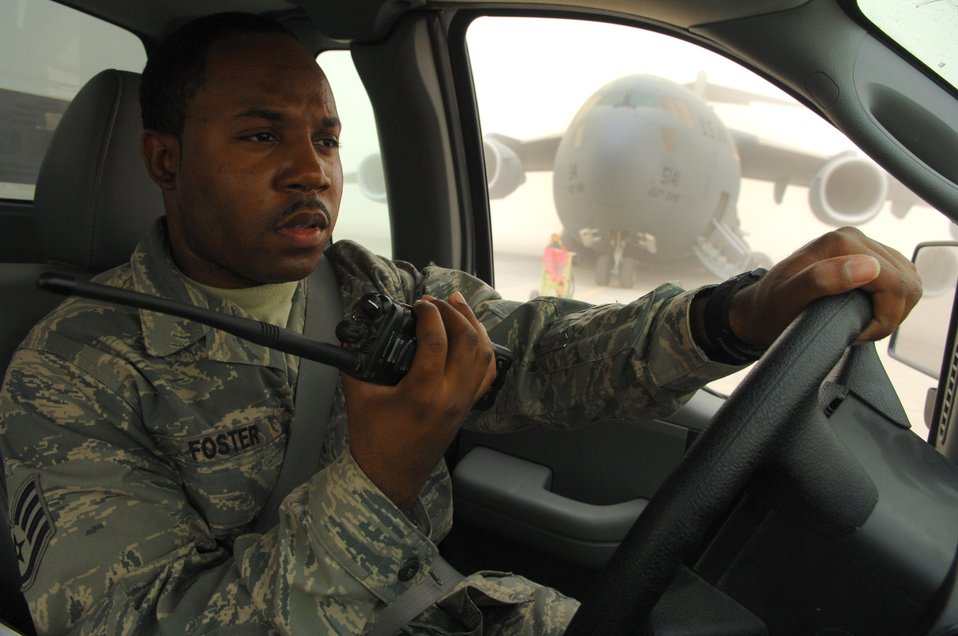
Need a clean-up!

Staff Sgt. DeShunn Foster requests a sweeper team April 29 to clean up debris on the flightline during a dust storm at Balad Air Base, Iraq. Sergeant Foster is the 332nd Expeditionary Operations Support Squadron airfield manager.